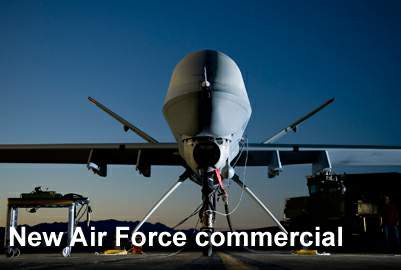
New Air Force commerical highlights unmanned aircraft system

An Air Force commercial highlighting the technology of the unmanned aircraft systems is airing nationally this week in television markets and select movie theaters across the country. The